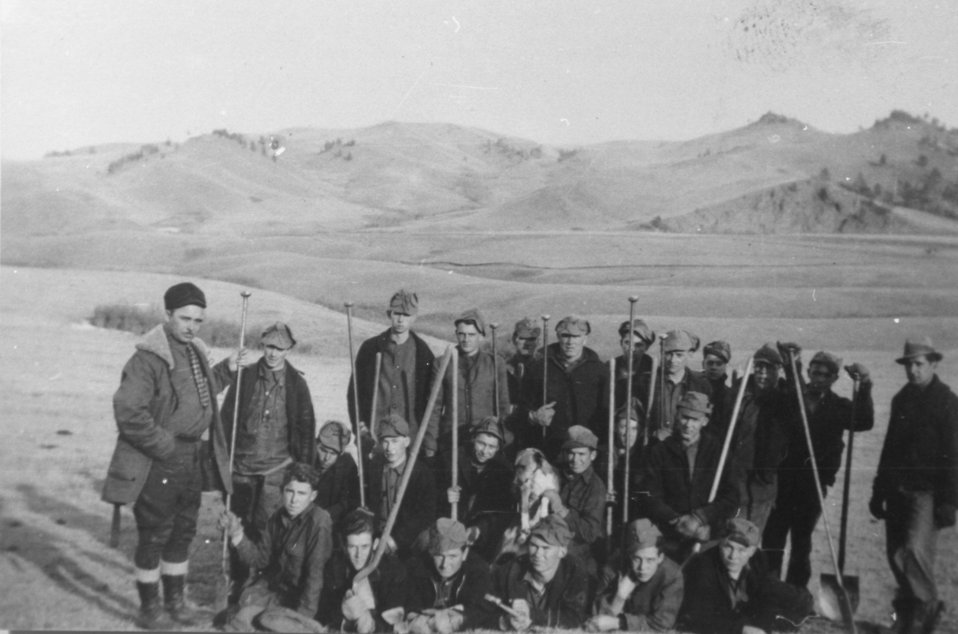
CCC Fence crew from Gap Ranch Camp working in Glass Butte area. Note the tampers and shovels. circa 1940. Joe Urbanek photograph